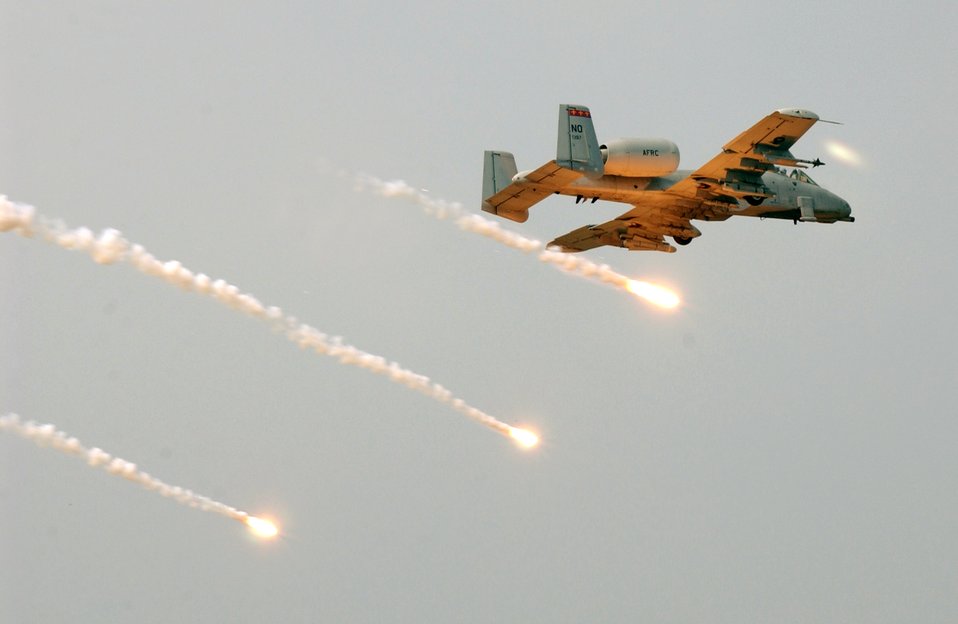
Thunder flares, too

FORT POLK, La. -- An A-10 Thunderbolt II drops several flares after destroying a ground target during a live-fire engagement.